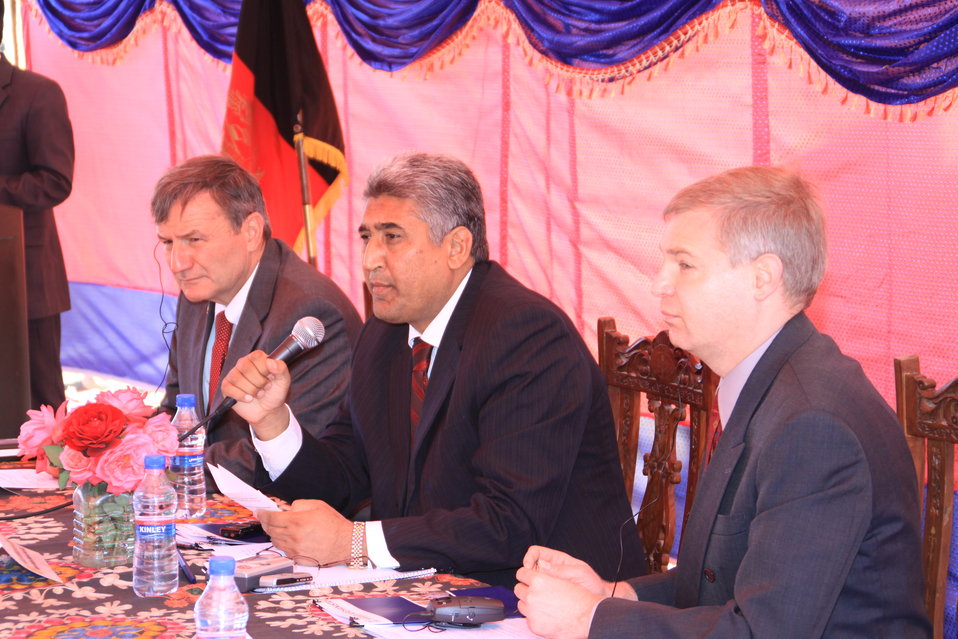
AVIPA Plus Wheat Seed Distribution 101005

US Ambassador Karl Eikenberry and USAID Acting Mission Director Kevin Brownawell joined the Minister of Agriculture, Irrigation and Livestock, H.E. Minister Mohammed Rahimi in signing a Memorandum of Understanding and distributing vouchers to area farmers for wheat and fertilizer.

US Ambassador Karl Eikenberry and USAID Acting Mission Director Kevin Brownawell joined the Minister of Agriculture, Irrigation and Livestock, H.E. Minister Mohammed Rahimi in signing a Memorandum of Understanding and distributing vouchers to area farmers for wheat and fertilizer.